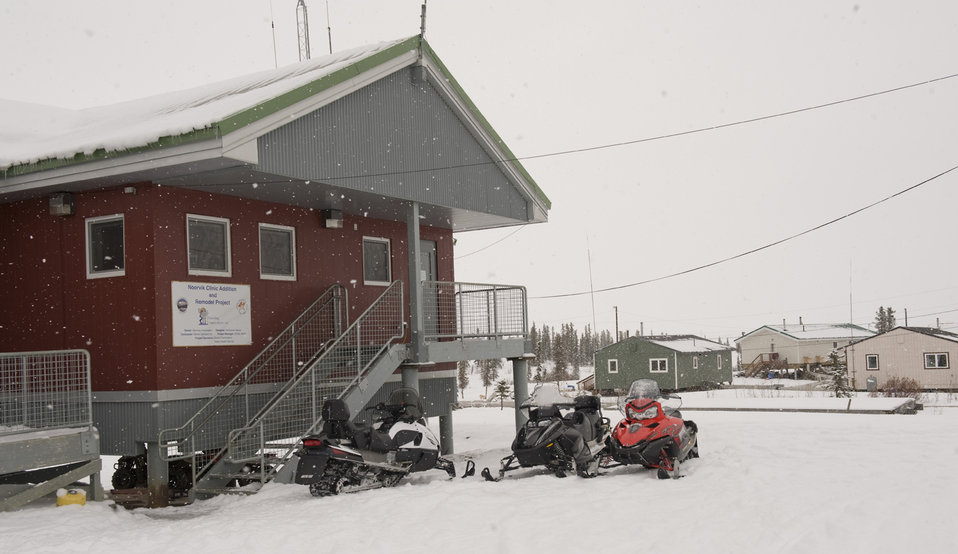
Operation Arctic Care

Medical teams are deployed to the village of Noorvik, Alaska, supporting Operation Arctic Care, a joint medical training exercise. The team works out of the village clinic and the high school. Snow machines are the primary form of transportation in this remote village.